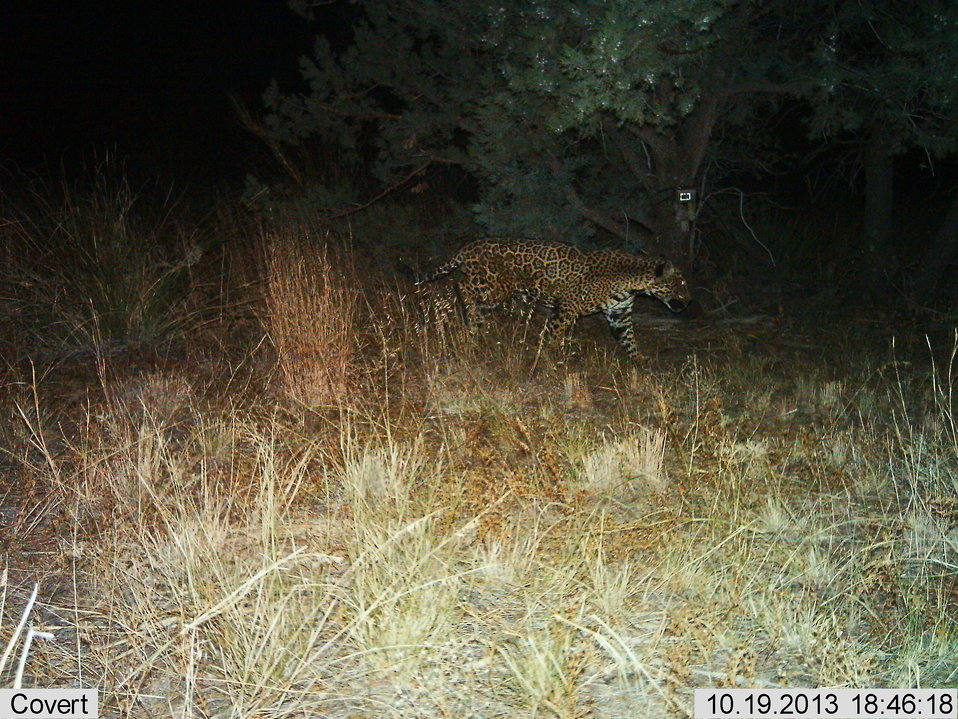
Male jaguar photographed by automatic wildlife cameras in the Santa Rita Mountains on October 19, 2013, as part of a U.S. Fish and Wildlife Service/Department of Homeland Security-funded jaguar survey conducted by University of Arizona. This is the second of three photos from October 19. The jaguar has been photographed previously at this location.